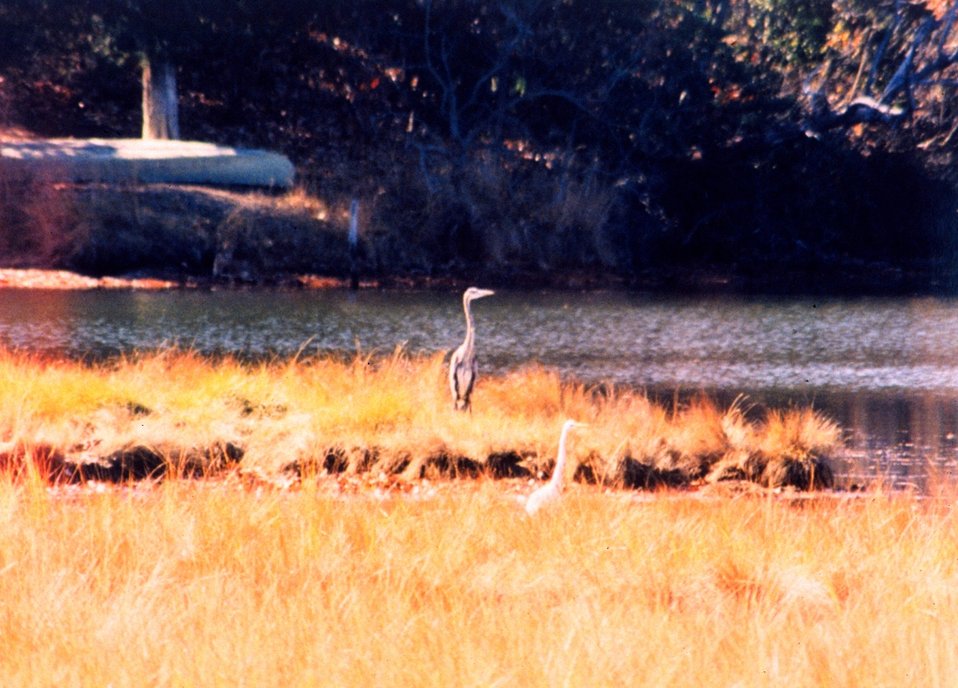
A Great Blue Heron and a Snowy Egret sharing a Patuxent River marsh area on a glorious fall day.